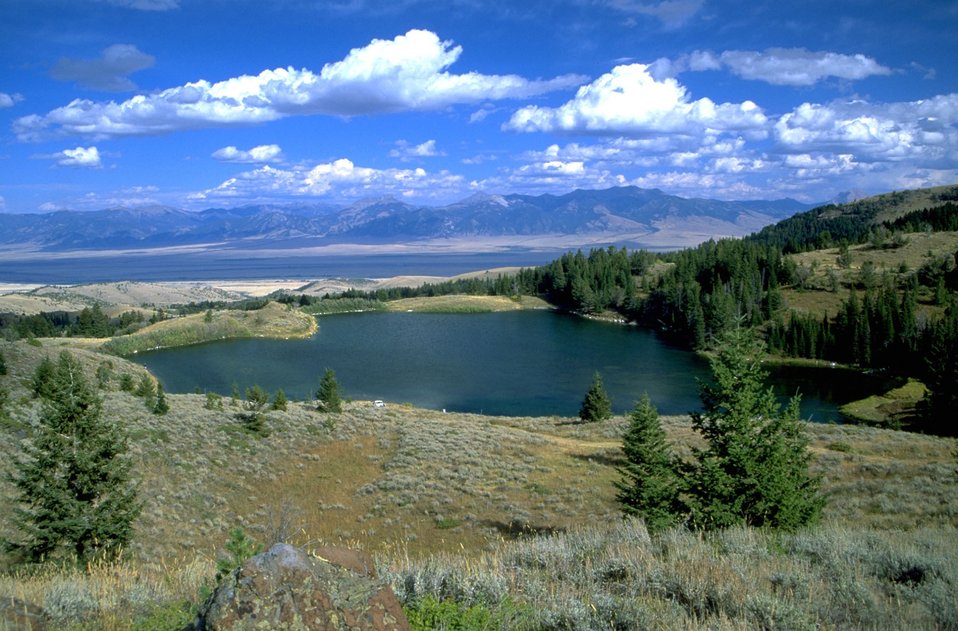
Scenic view of Axolotl Lake - Spanish Peaks in background